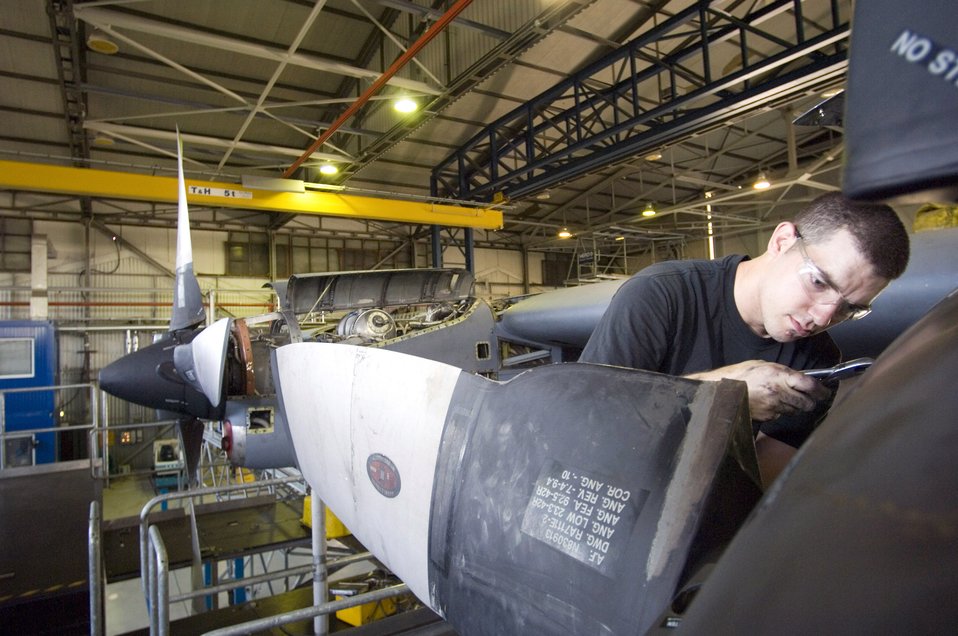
Isochronal inspection

Staff Sgt. Kianta Asplund works on a C-130 Hercules engine during an isochronal inspection at Ramstein Air Base, Germany, on July 18. Sergeant Asplund, of Melbourne, Fla., is an engine mechanic with the 86th Maintenance Squadron.